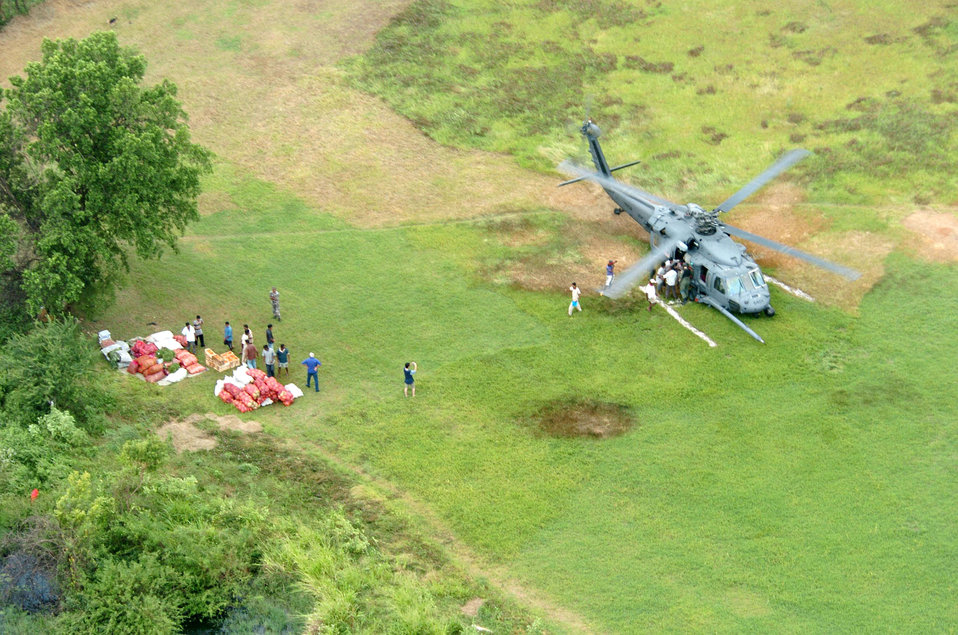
Air Force continues aid in Sri Lanka

DAMBULA, Sri Lanka -- An HH-60 Pave Hawk helicopter crew picks up vegetables here during an Operation Unified Assistance mission. The crew is helping bring food, medicine and supplies to the affected areas. They are assigned to the 33rd Rescue Squadron at Kadena Air Base, Japan.